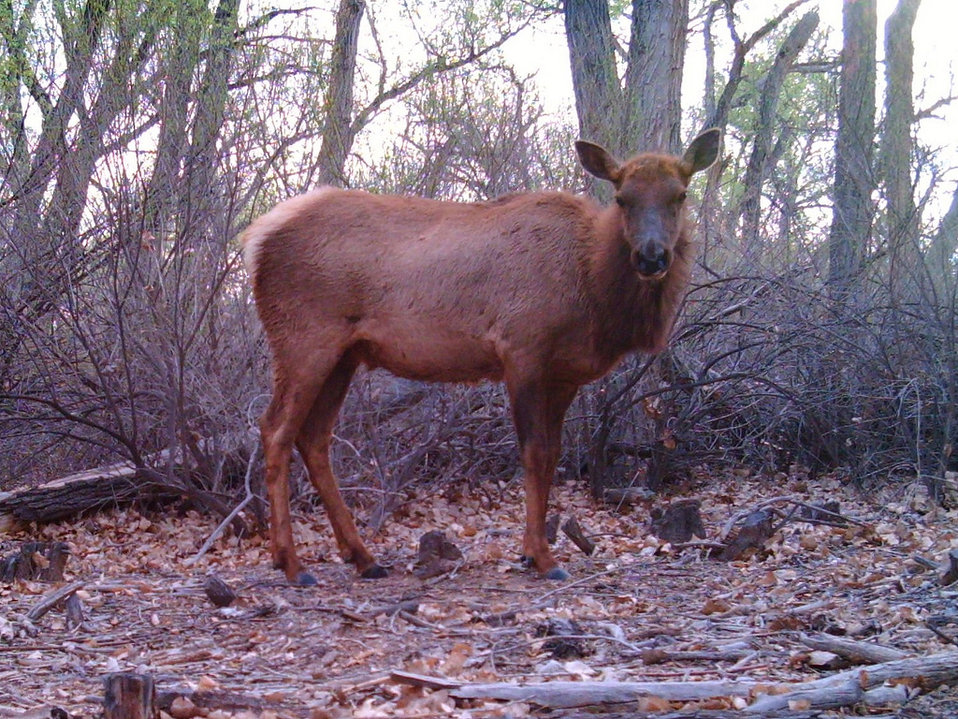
elk cow

Bosque del Apache National Wildlife Refuge, NM
Camera trap project by Matthew Farley, Jennifer Miyashiro and James Stuart
Photo made available by J.N. Stuart, Creative Commons